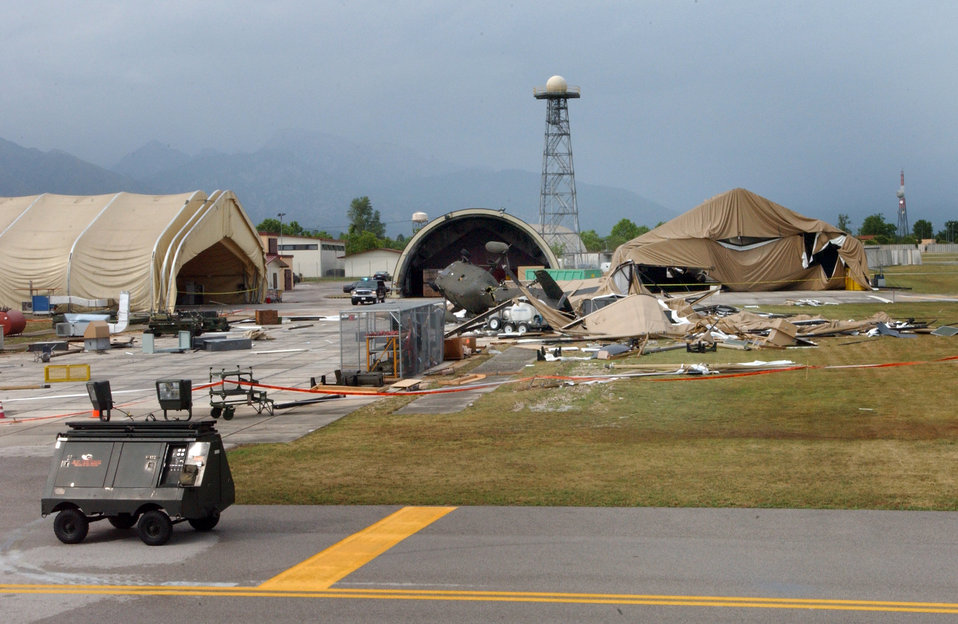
High winds

Severe thunderstorms, with wind gusts measuring up to 82 knots, tore through Aviano Air Base, Italy, on Thursday , June 29, causing basewide damage estimated at $3.5 million.